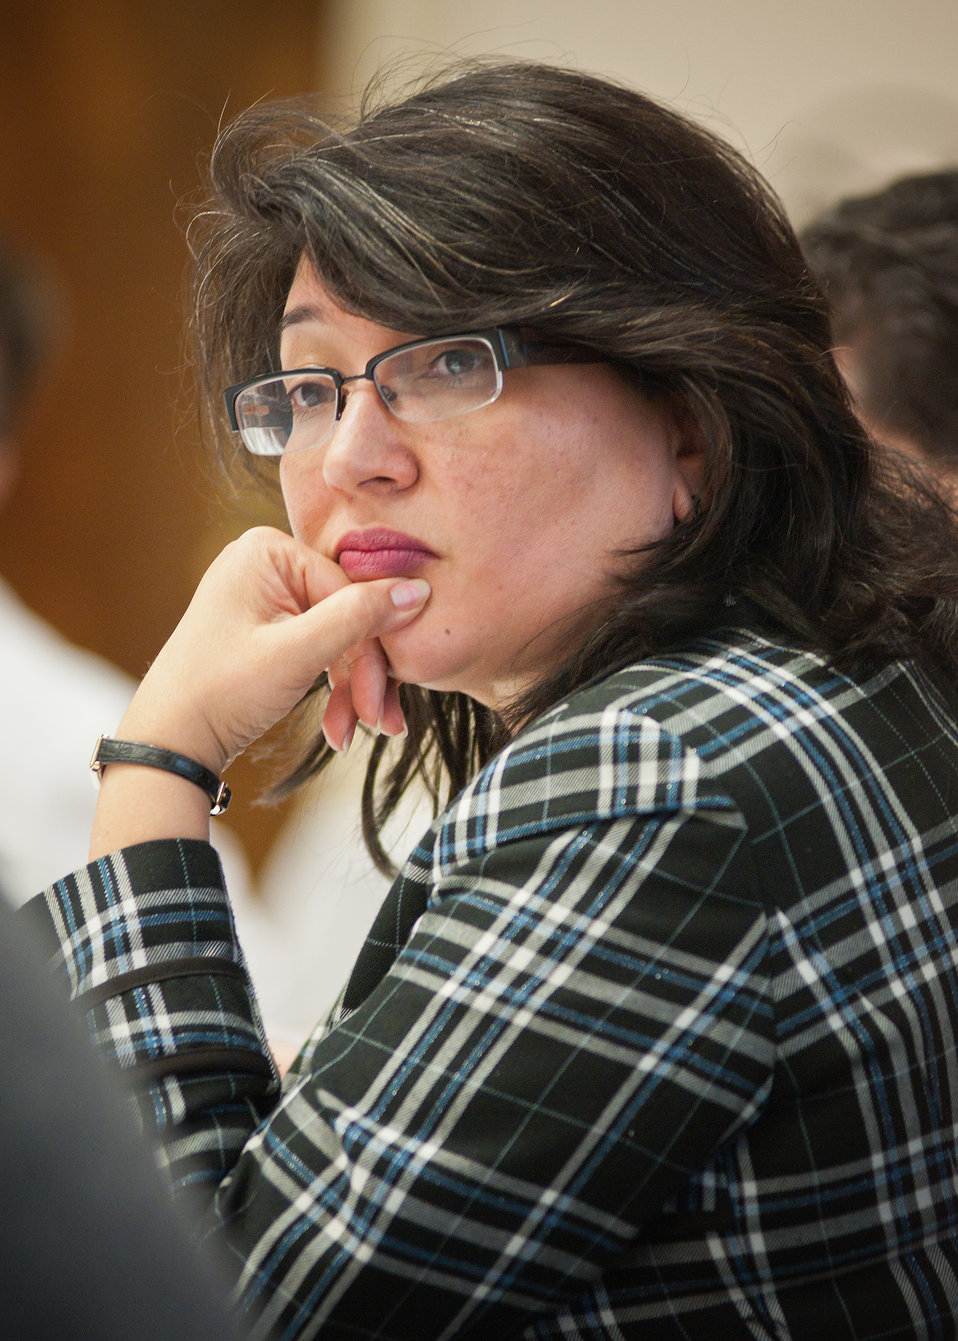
Roxanna Barillas, Center for Faith Based and Neighborhood Partnerships
listens to presenters at the United States Department of Agriculture Hispanic Roundtable at the United States Department of Agriculture, Monday, December 5, 2011 in Washington, DC. The roundtable focused on recruitment, retention and employee development for the purpose of developing the USDA Hispanic recruitment Plan. The roundtable hosted several national Hispanic partners and recognized USDA Hispanic organizations and associations.